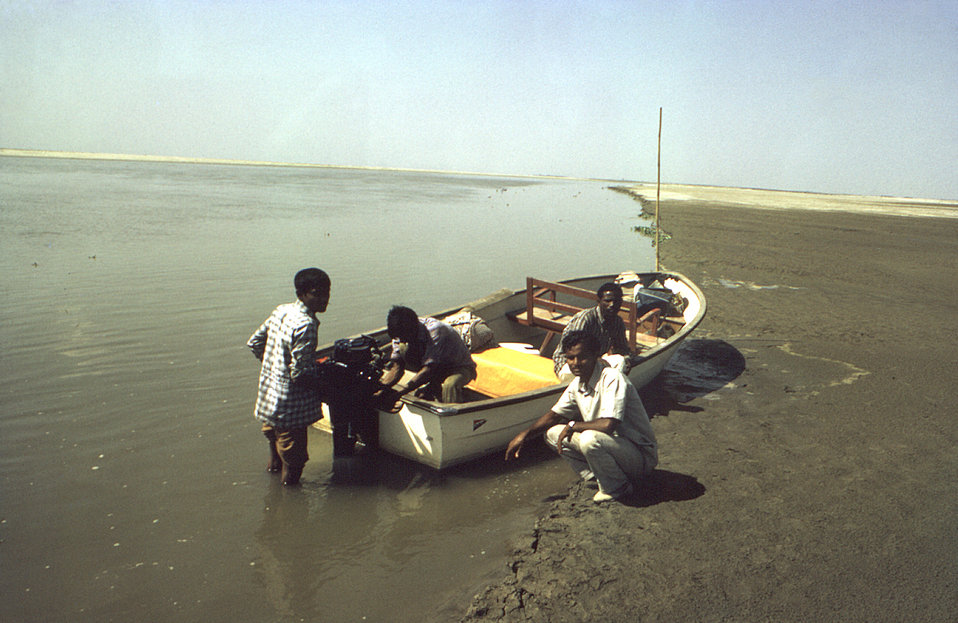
This image depicted a group of Bengali men who were on the banks of a body of water inside the country of Bangladesh, where this image is believed to have been taken sometime in the early 1970s, during the worldwide smallpox eradication efforts.The Disease